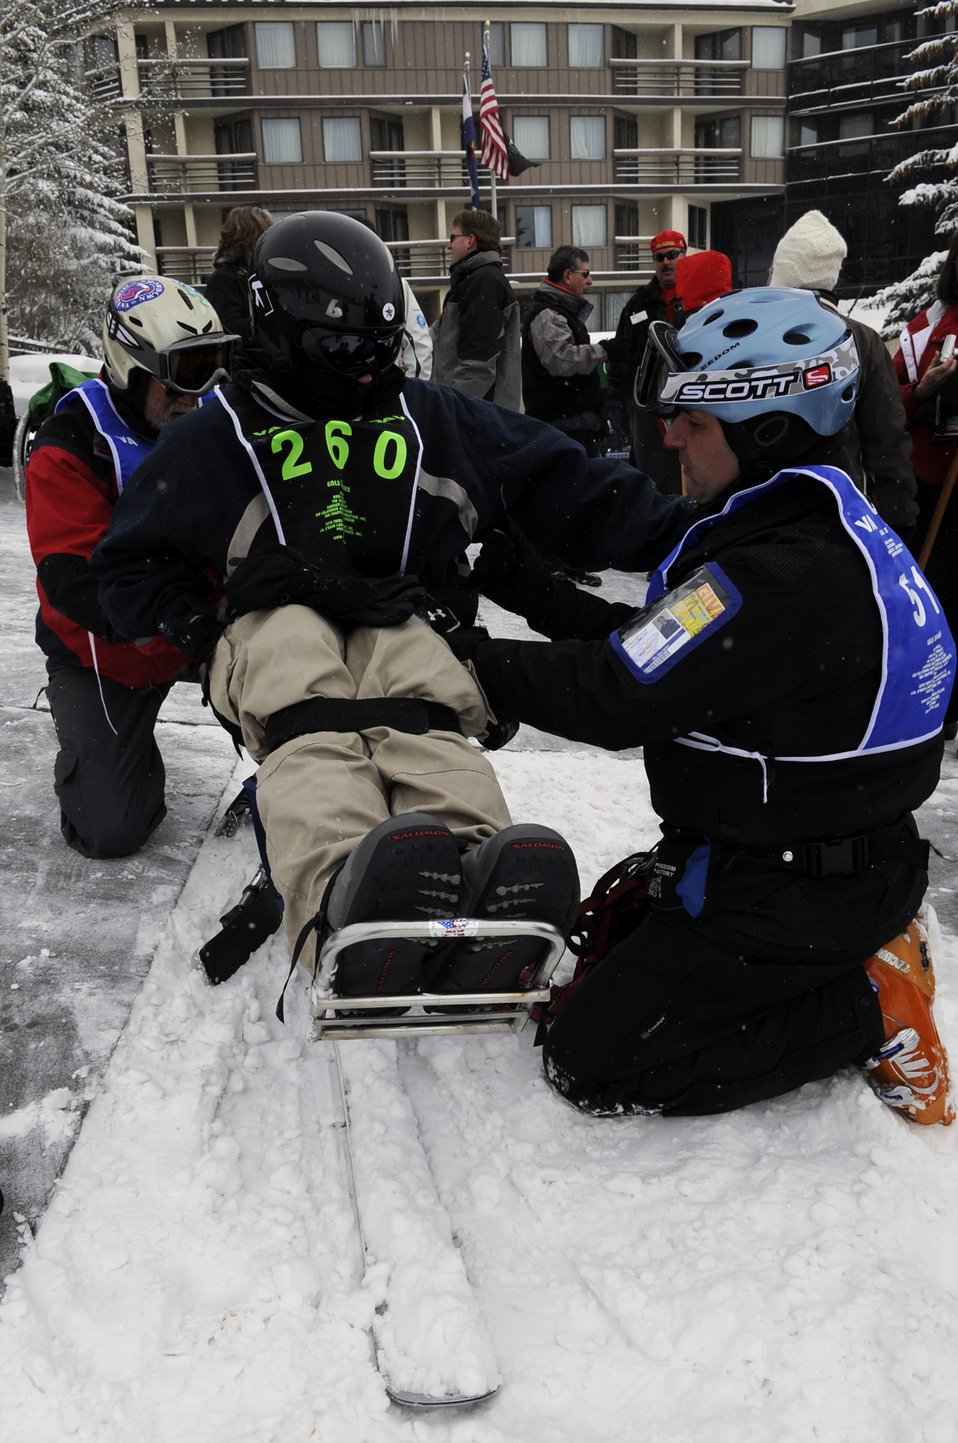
Luke Airmen assist disabled veterans at ski clinic

Senior Airman Shawn O'Neil waits his turn to mono-ski with the help of an instructor during the 23rd National Disabled Veterans Winter Sports Clinic held March 30 at the Snowmass Village, Colo. The annual disabled learn-to-ski clinic helps motivate and rehabilitate disabled Department of Defense veterans.